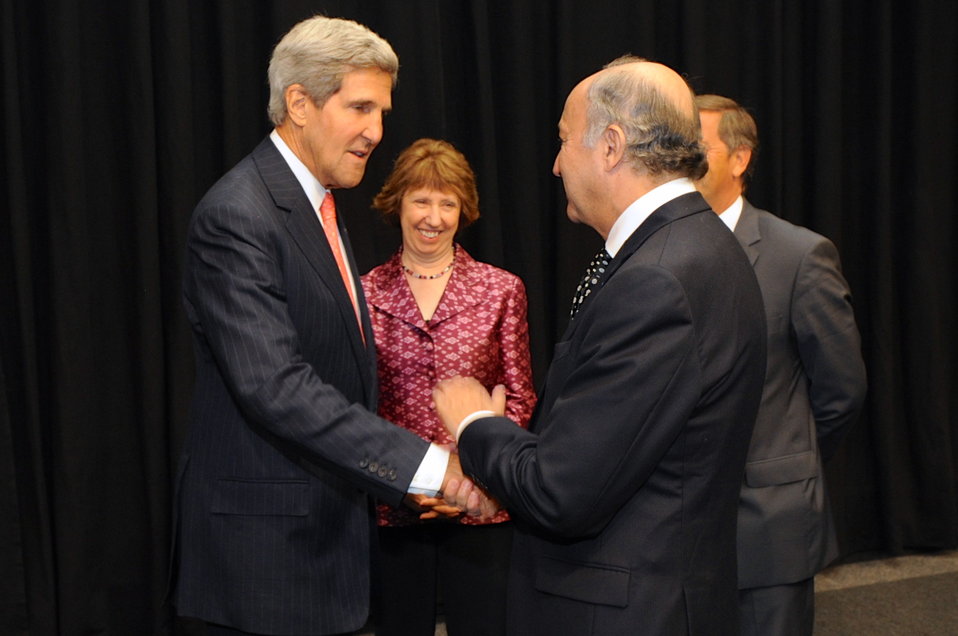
Secretary Kerry greets French Foreign Minister Fabius

U.S. Secretary of State John Kerry greets French Foreign Minister Laurent Fabius, as European Union High Representative Catherine Ashton looks on, before the start of a meeting of EU Foreign Ministers in Vilnius, Lithuania, on September 7, 2013.